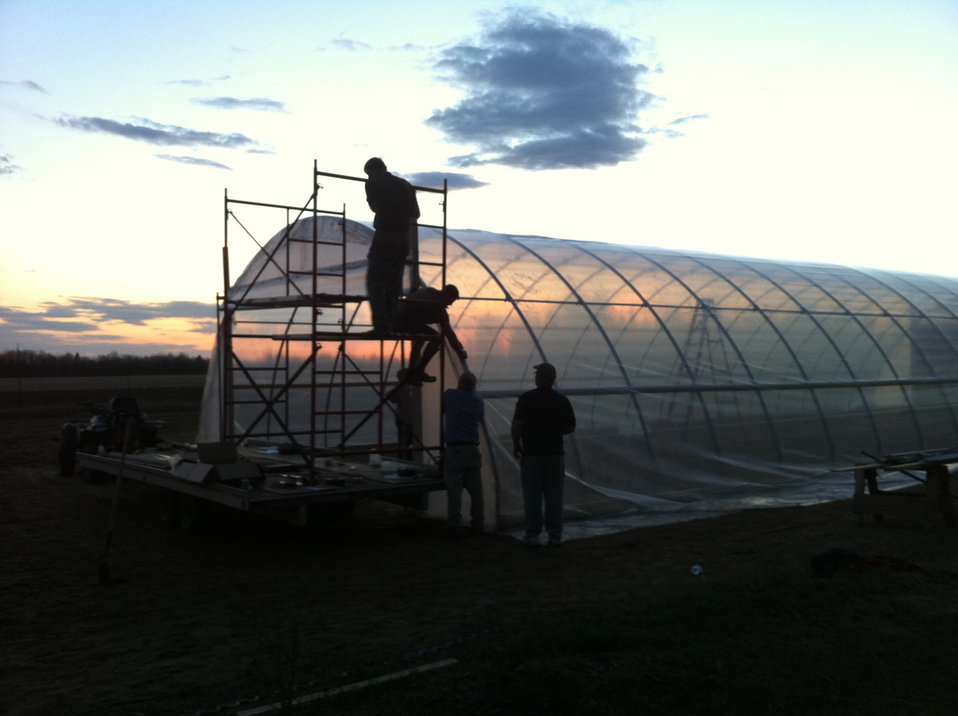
HighTunnelConstruction

Kate Paul worked with the U.S. Department of Agriculture's (USDA) Natural Resource Conservation Service (NRCS) to install a seasonal high tunnel on her Owl Forest Farms.